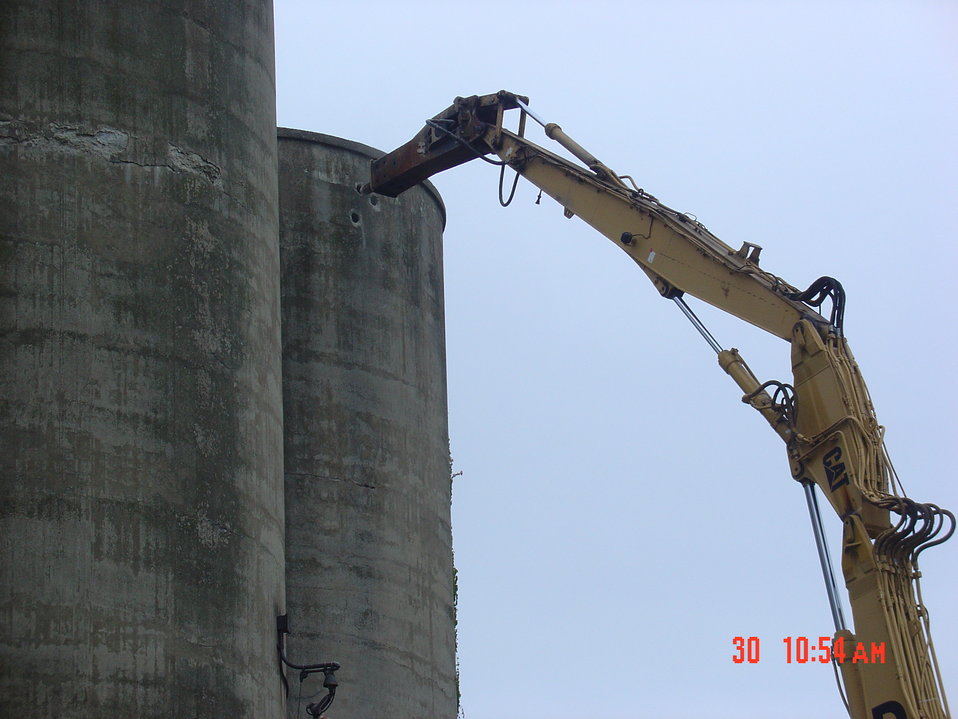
BLDG 401 SILO FIRST HOLES POKED IN DEMOLITION

Activities from the Niagara Falls Storage Site, which is associated with the former Lake Ontario Ordnance Works. Formerly Utilized Sites Remedial Action Program (FUSRAP), a program initiated in 1974 to identify, investigate and clean up or control sites that were part of the Nation's early atomic energy and weapons program. Activities at the sites that are eligible for FUSRAP were conducted by Manhattan Engineer District (MED) or the Atomic Energy Commission (AEC), both predecessors of the Department of Energy (DOE). The U.S. Army Corps of Engineers was assigned management of FUSRAP by Congress in 1997.